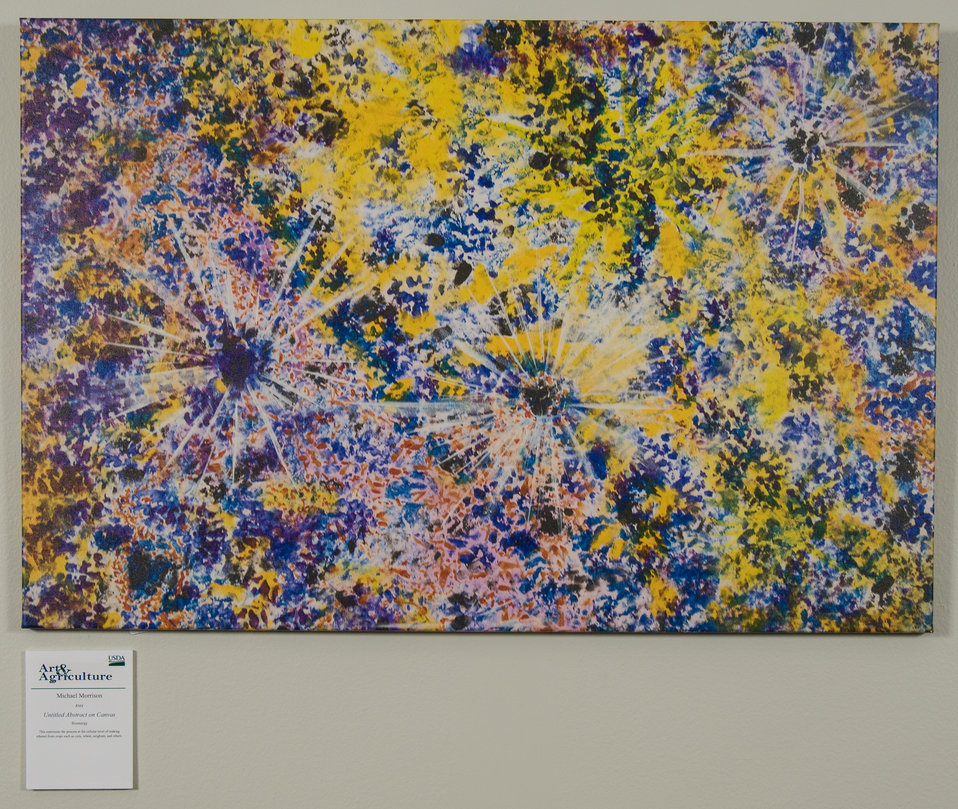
Online Viewer's Choice entries of the 2013 Art & Agriculture, Tuesday, July 9, 2013, in the South Building, Washington, D.C. Themes were expressed by employees from across the department and the contest was open to full-time and part-time USDA employees. Winning artwork will be displayed till the end of the year. U.S. Artistic expression is a creative outlet that is vital for an individual to grow and develop.